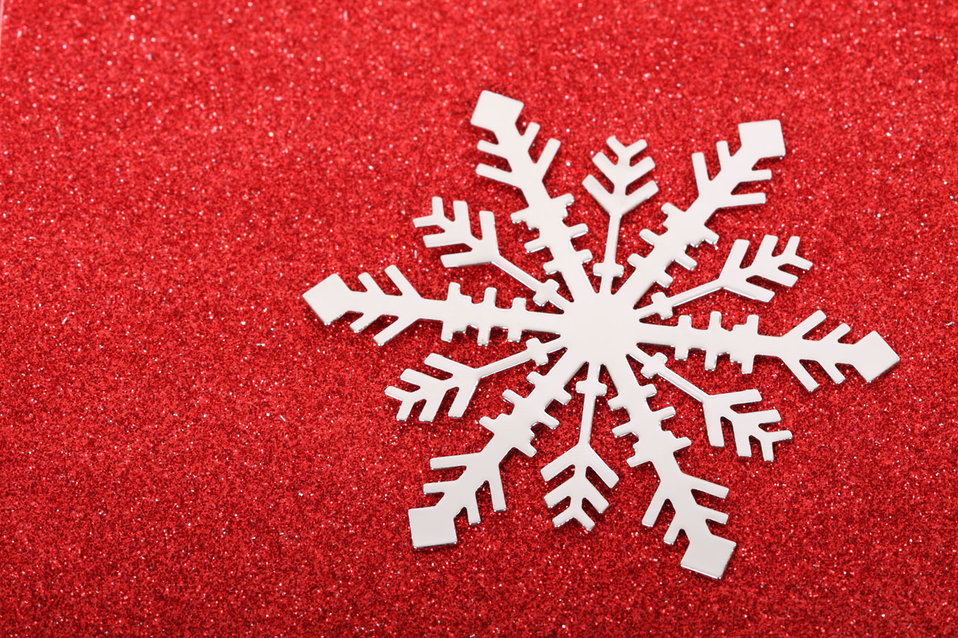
Snowflake on red glittery background